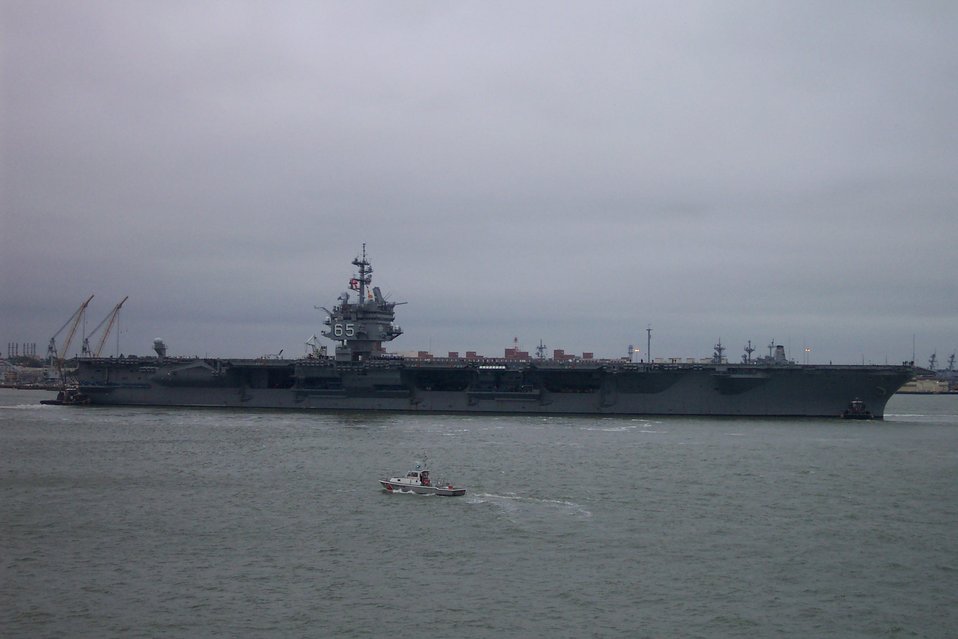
USS ENTERPRISE maneuvering for docking.